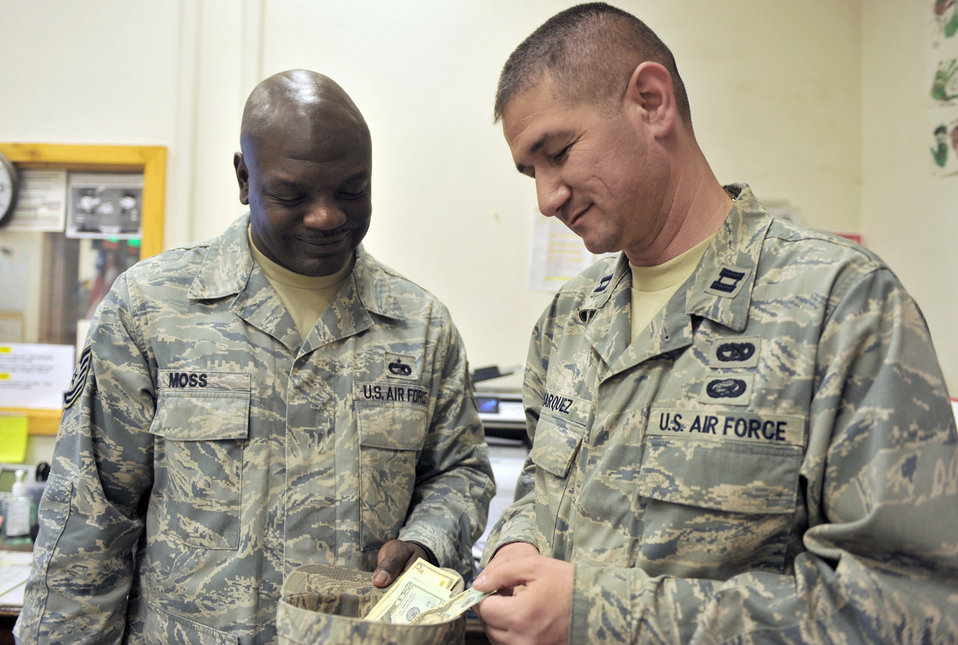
Deployed Airmen replace money stolen from girls in Georgia

Tech. Sgt. Ladell Moss collects money from Capt. Charles Marquez April 14, 2011, at Bagram Airfield, Afghanistan. Both Airmen are assigned to the 455th Expeditionary Aerial Port Squadron.